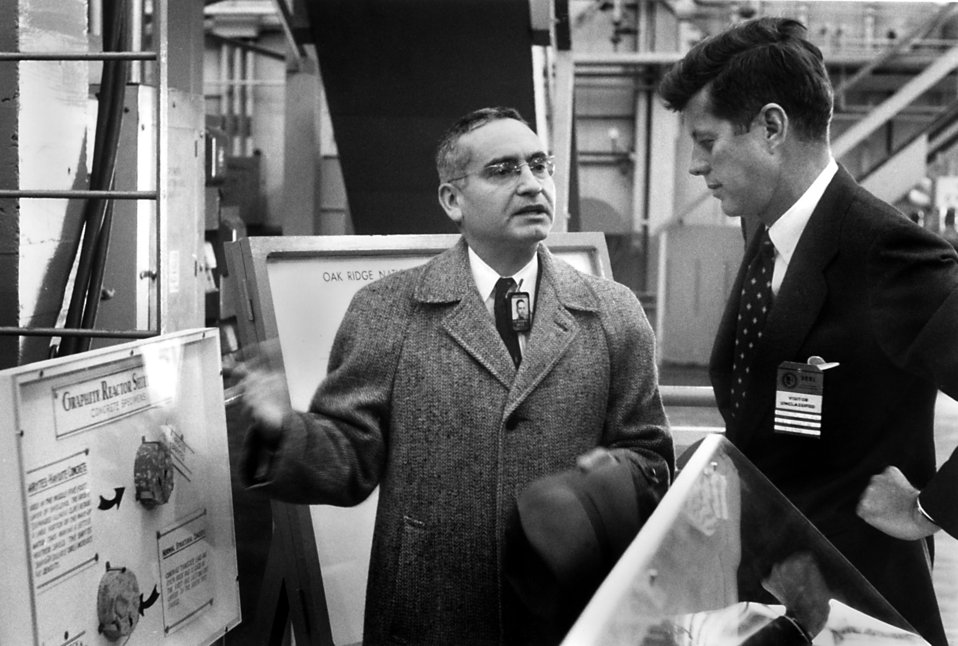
Dr Alvin Weinburg and Sen. John F. Kennedy at the Graphite Reactor Oak Ridge National Lab.

59-0152-28 DOE photo by Ed Westcott
Dr Alvin Weinburg and Sen. John F. Kennedy at the Graphite Reactor Oak Ridge National Lab. Oak Ridge Tennessee 2-24-1959